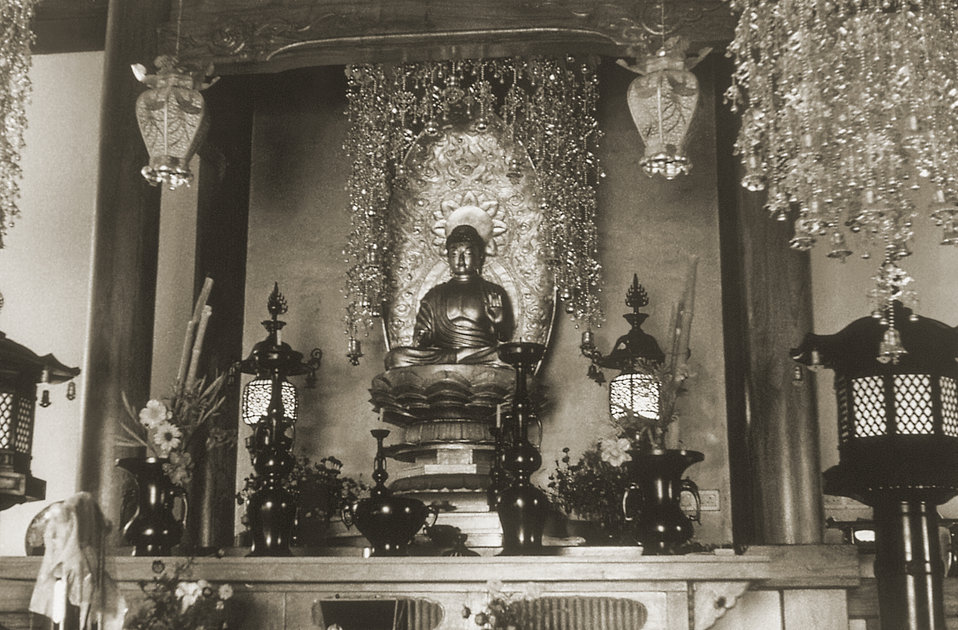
This 1975 image depicts the interior of a Japanese Buddhist temple located in the Bodh Gaya, or the holy pilgrimage site, in the Gaya district inside the Indian State of Bihar.